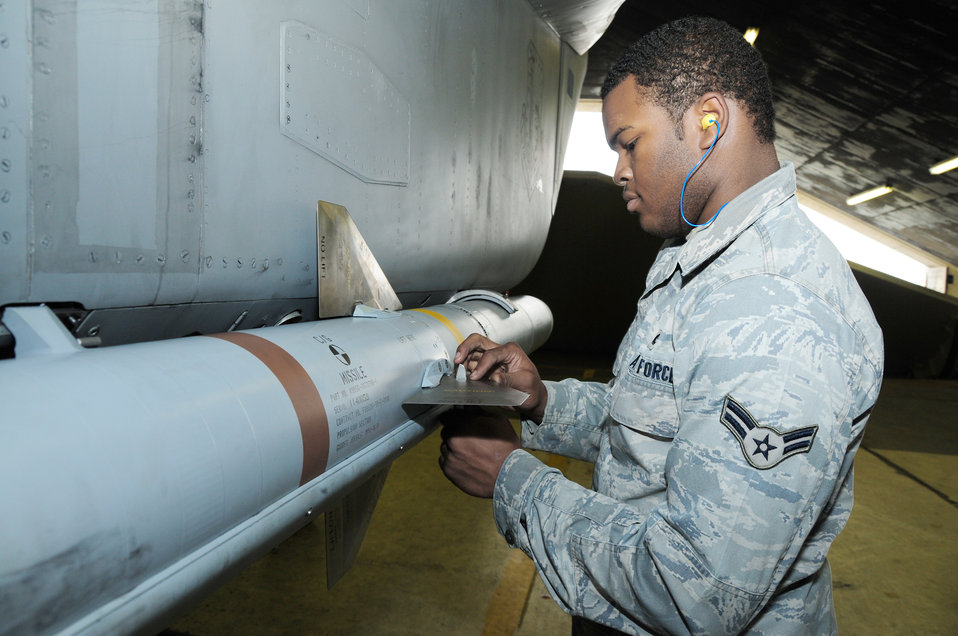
Icelandic Air Policing Mission

Airman 1st Class Billy Reams gives the final touches to the munitions load by securing the last fins on an AIM-120 Advanced Medium-Range Air-to-Air Missile Sept. 23, 2010, at Keflavik, Iceland. Airman Reams is a team member of the 493rd Expeditionary Fighter Squadron Weapons Load Crew.